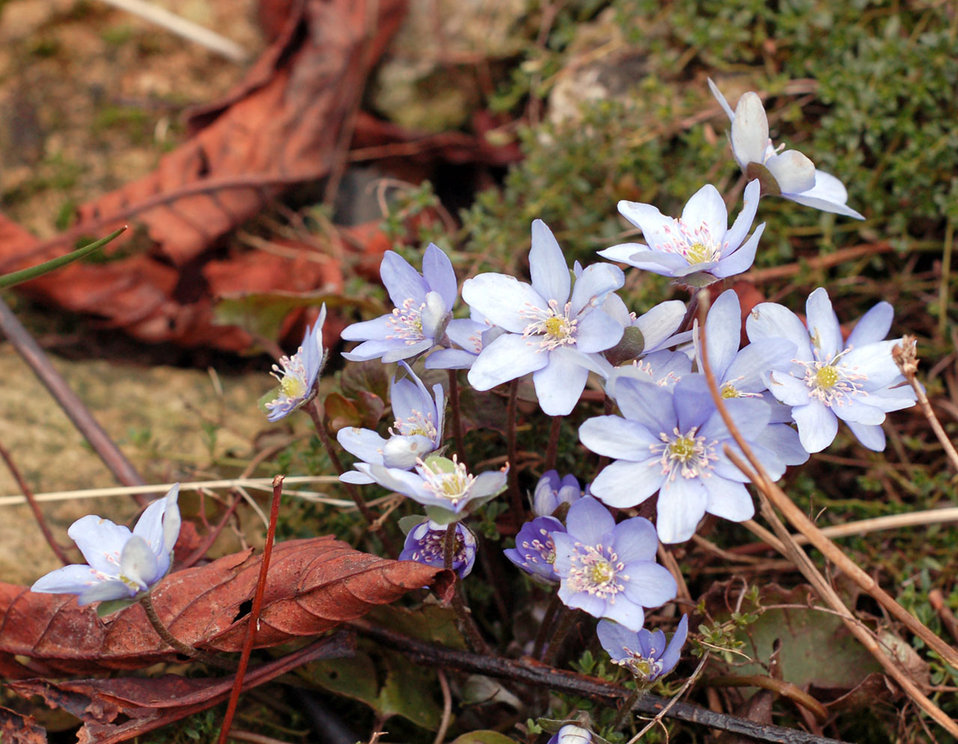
Spring flowers

Blue flowers - early spring.